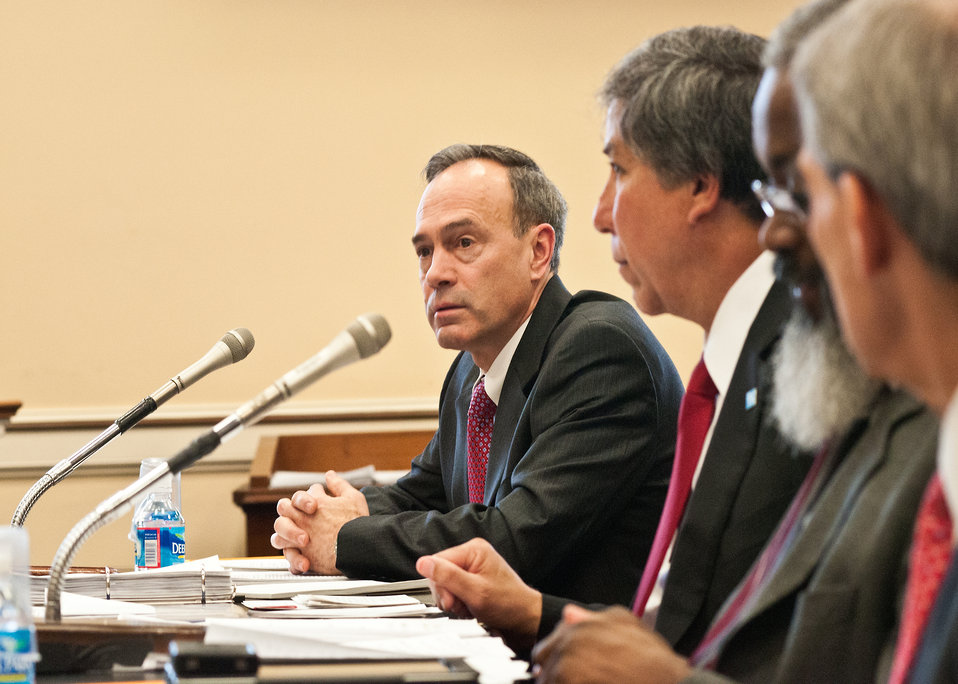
Alan Christian (left), Acting Administrator, Grain Inspection Packers Administration answers questions posed by members of the House Agriculture Appropriations Subcommittee while testifying on Capitol Hill with Ed Avalos (right), Under Secretary, Marketing and Regulatory Programs and representatives of the Marketing and Regulatory Program agencies on their fiscal year 2013 budget requests in Washington, D.C., Tuesday, March 6, 2012.